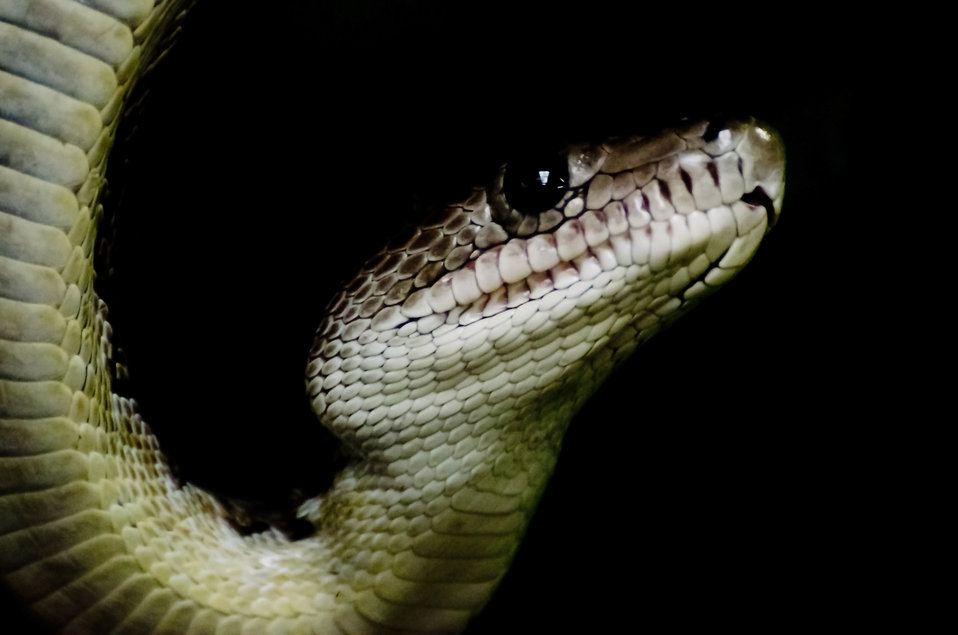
Snake - animals

Snake on the black background.